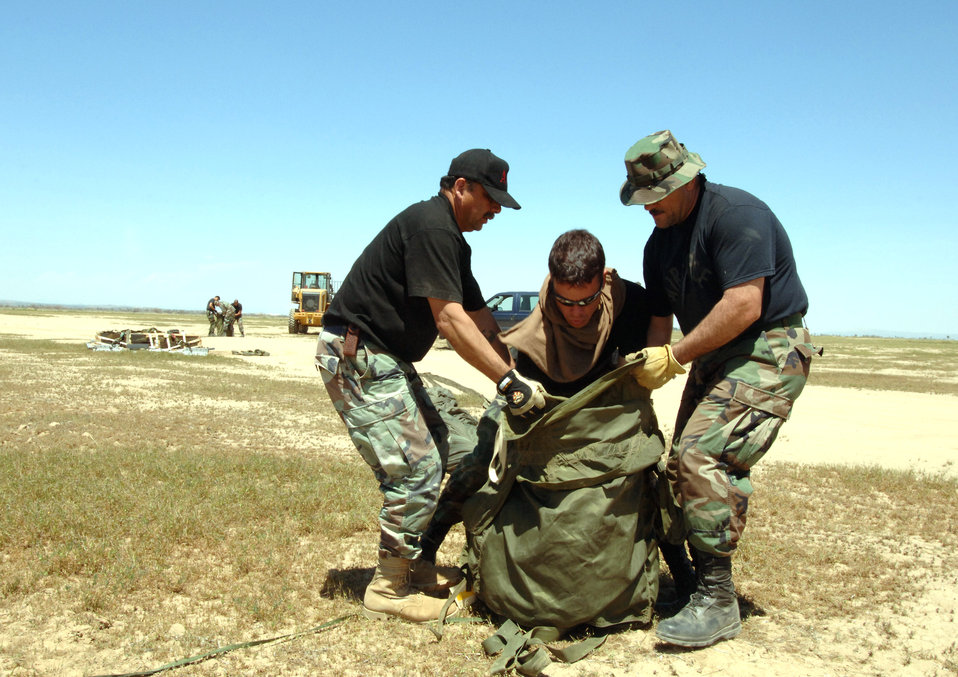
Pallet drop over California

(Left to right) Master Sgt. Ruben Camacho and Senior Airmen Mark Richwine and Cenobio Alvarez pack up a parachute at Edwards Air Force Base, Calif., that was used to extract a Type 5 heavy pallet dropped from a C-130J Hercules on Sunday, April 30, 2006. The mission was to certify the aircraft's capability to drop this type of pallet. Guard, Reserve and active-duty aircrews from Channel Islands Air National Guard Base, Calif.; Little Rock AFB, Ark.; and Keesler AFB, Miss., participated in the certification. This was the first time the